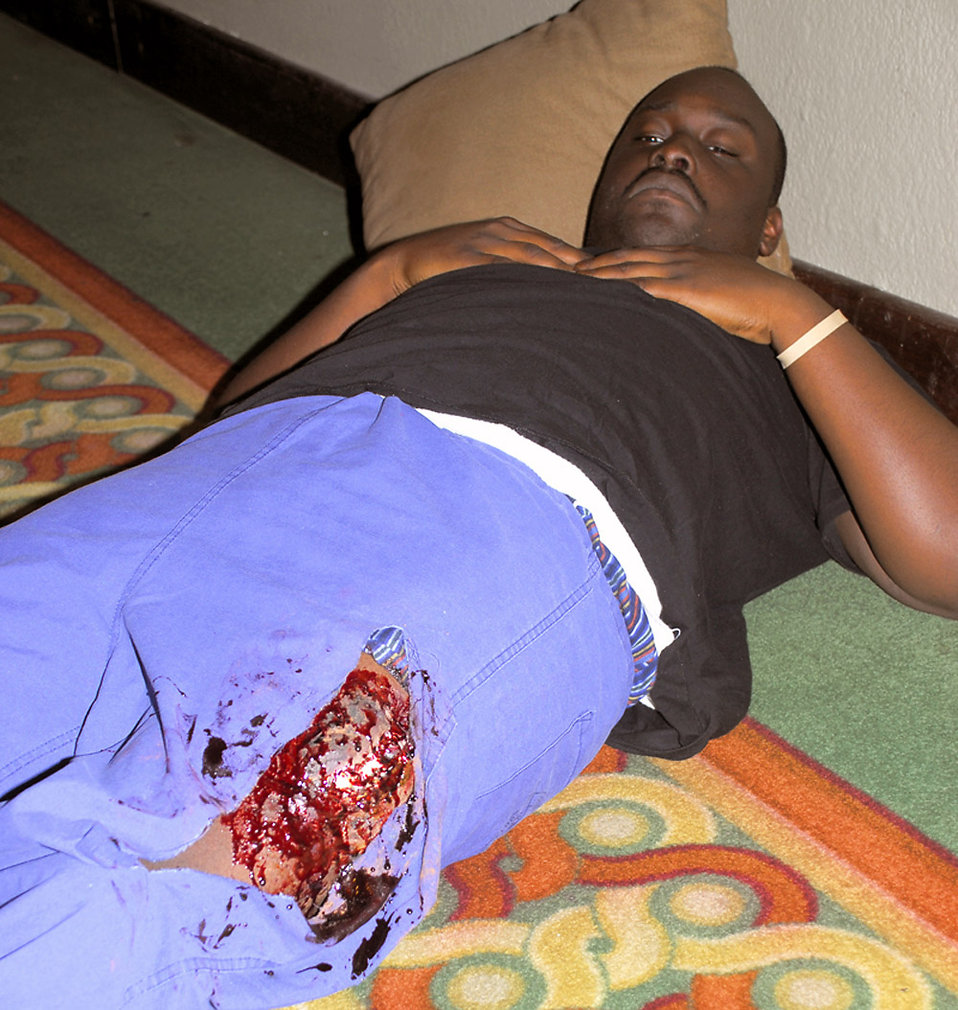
JTF-Bravo MEDEL team teach trauma course to Honduran medical proffesionals

Staff Sgt. Emmrid Gilbert plays the role of a victim with a femur fracture at a Honduran medical conference July 8 in Tegucigalpa, Honduras. The Joint Task Force-Bravo Medical Element team member played the role to give the medical professionals who attended a more realistic view of a trauma case. Sergeant Gilbert is deployed from the U. S. Air Force Academy, Colo.